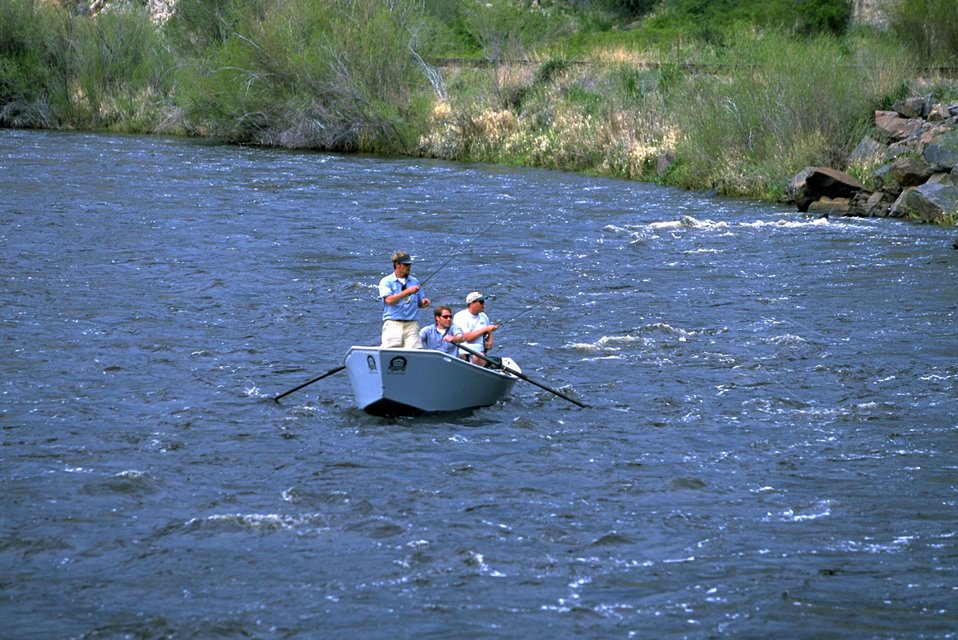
Fishing on the Big Hole River